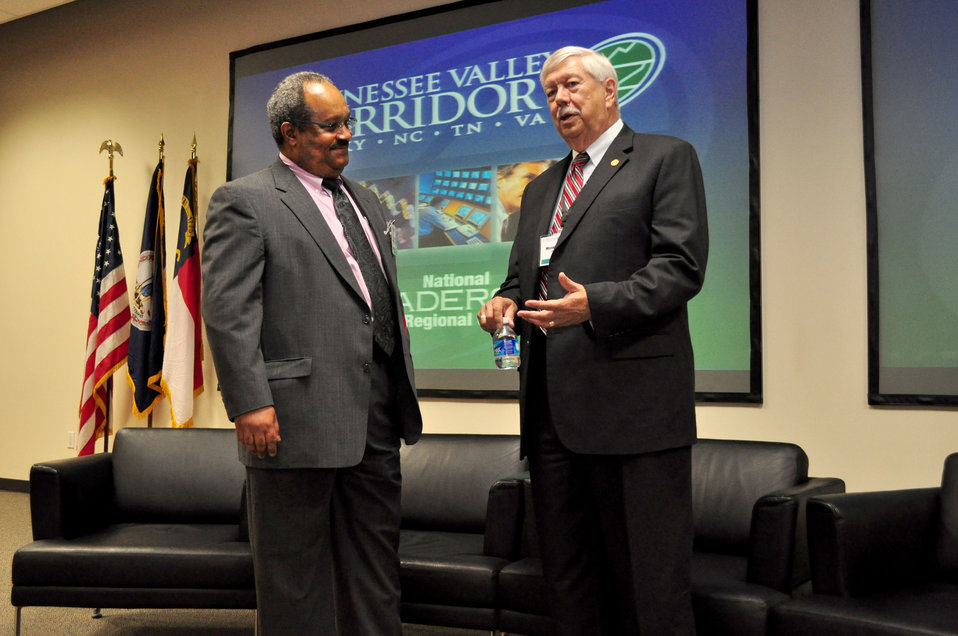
Tennessee Valley Corridor 2013 Oak Ridge Larry Kelly Manager DOEORO and Tom Beehan Mayor Oak Ridge

13-062 DOE photo Lynn Freeny 5-29-2013 Oak Ridge Tennessee